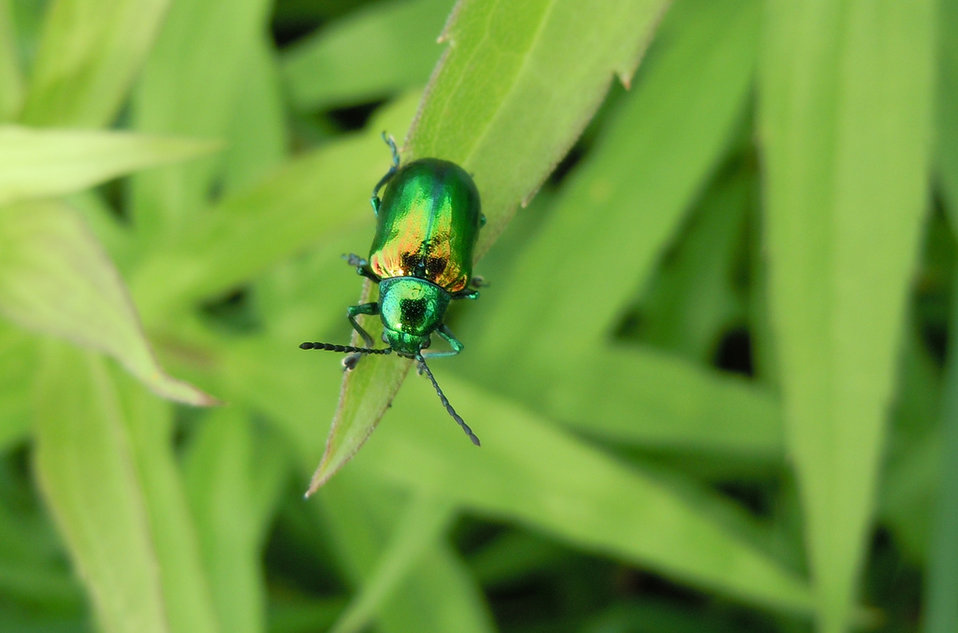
dogbane beetle

Port Louisa National Wildlife Refuge, IA
June 2011